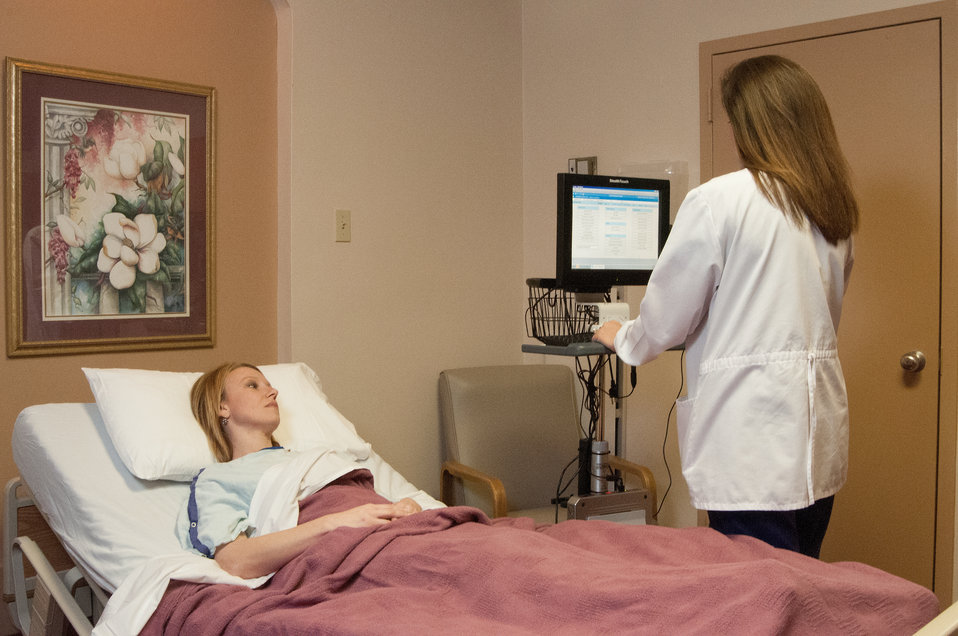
R.J. Taylor Memorial Hospital, Inc. Licensed Practical Nurse Dora Cater, LPN discusses a patients’ diagnosis and symptoms and records the information in the hospitals’ Electronic Medical Records System in Hawkinsville, GA on Mar. 6, 2013. The hospital is a licensed private, not-for-profit acute care facility providing emergency, specialty and primary health care in an area of rural Georgia that has a high percentage of people living below the state average poverty level and considered most economically distressed. The hospital has purchased an Electronic Medical Records System under an incentive program by the Federal government through the U.S. Department of Agriculture (USDA) Rural Development (RD) Community Facilities Loan (CF) that ensures fiscally responsive access to superior quality integrated health care.